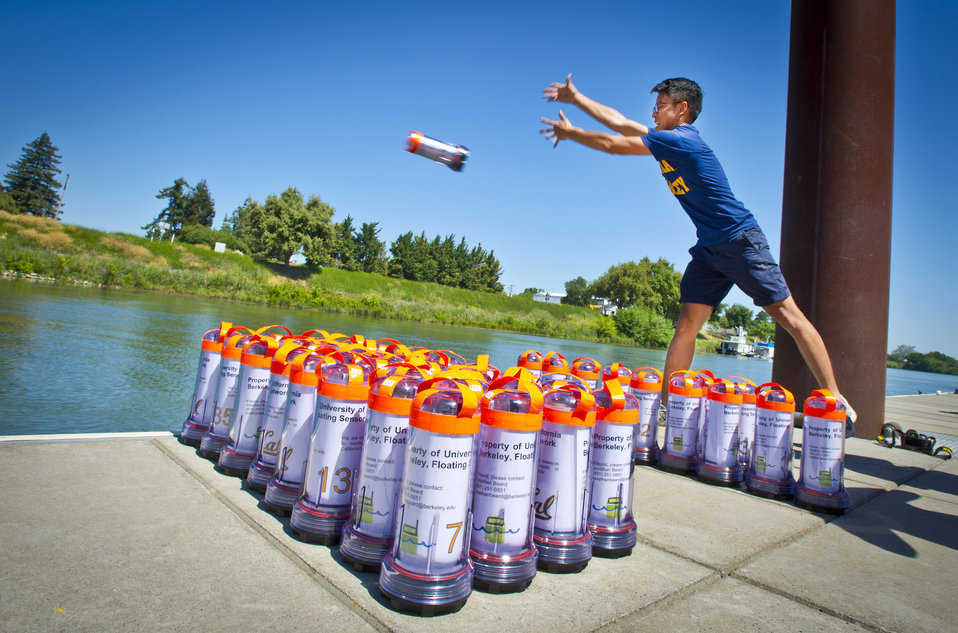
Floating Robots in the Sacramento River Delta

UC Berkeley engineering student Jerome Thai launches one of 100 floating sensors into the Sacramento River. The Sacramento-San Joaquin River Delta’s channel system supports California's agricultural industry and provides drinking water for 22 million Californians. The Floating Sensor Network project is a collaborative effort between the Center for Information Technology Research in the Interest of Society (CITRIS), Berkeley Lab and its National Energy Research Scientific Computing Center (NERSC), and UC Berkeley’s Departments of Civil and Environmental Engineering and Electrical Engineering. The project will collect data to help researchers and scientists better understand how water flows from the Delta to pumping stations and the San Francisco Bay. To learn more, check out the Floating Sensor Network's press release.